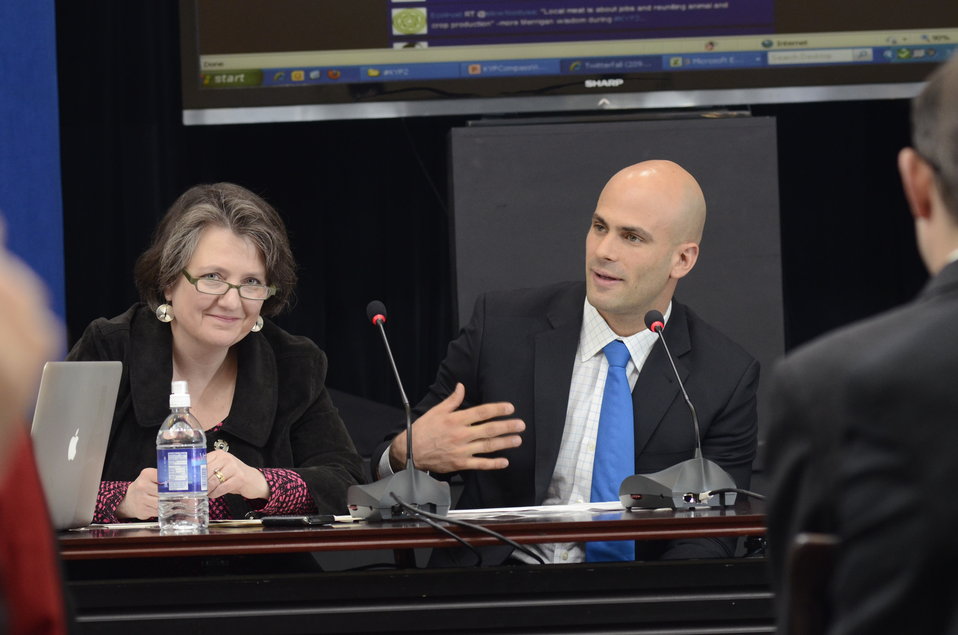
Agriculture Deputy Secretary Kathleen Merrigan (left) and White House Personal Chef and Food Policy Advisor Sam Kass (right) during a Know Your Farmer Compass event that used twitter social media to continue the National Conversation on Local and Regional Food projects and how they offer economic opportunities to local farmers, ranchers and food entrepreneurs. The virtual conversation broadcasted via twitter from the White House, in Washington, D.C., on Monday, March 5, 2012.